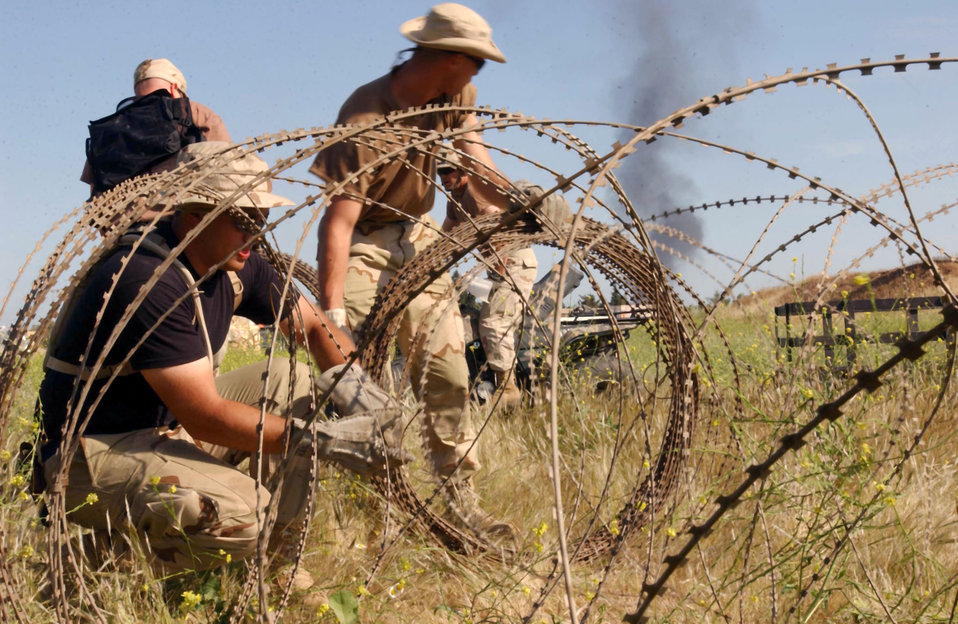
Unwound

OPERATION IRAQI FREEDOM -- 615th Air Mobility Operations Group personnel lay concertina wire to secure the perimeter of a forward-deployed location in Iraq supporting Operation Iraqi Freedom.